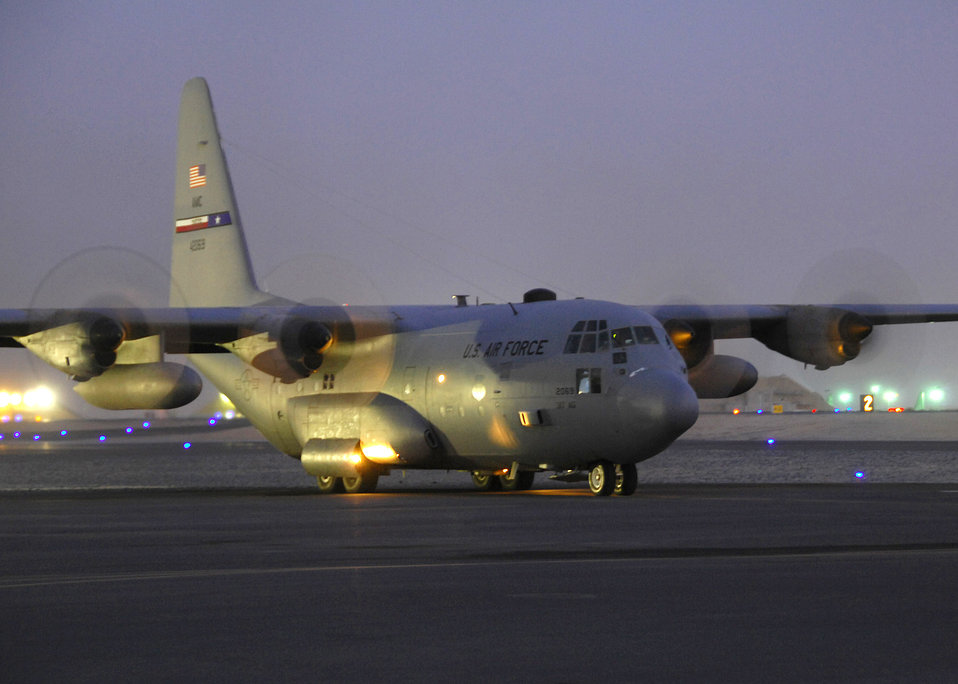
Nov. 24 airpower summary: C-130s vital to transport missions

A C-130 Hercules prepares to depart a Southwest Asia air base on a sortie en route to Iraq. The C-130s are vital to transporting passengers and cargo, providing intra-theater heavy airlift and supporting operations throughout Afghanistan, Iraq and the Horn of Africa. The C-130 is assigned to the 386th Expeditionary Operations Group.